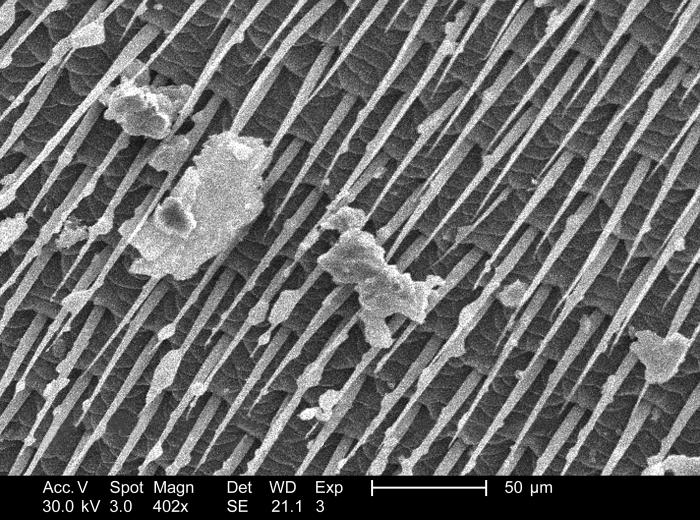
Magnified 402x, this scanning electron micrograph (SEM) revealed that this unidentified wasp's wing bore many sensorial 'hairs', known as 'setae' on its cuticular surface. These hairs are sensitive to changes in the organism's environment including changes in temperature, wind speed and direction, chemical variations, and changes to the physical make-up of its surroundings, i.e., tactile interaction. These setae, along with the insect's antennae, eyes, and wings offer the organism a detailed comprehensive depiction of its immediate environment. Note the particulate matter caught up amongst the setae, which was picked up from the insect's environment.